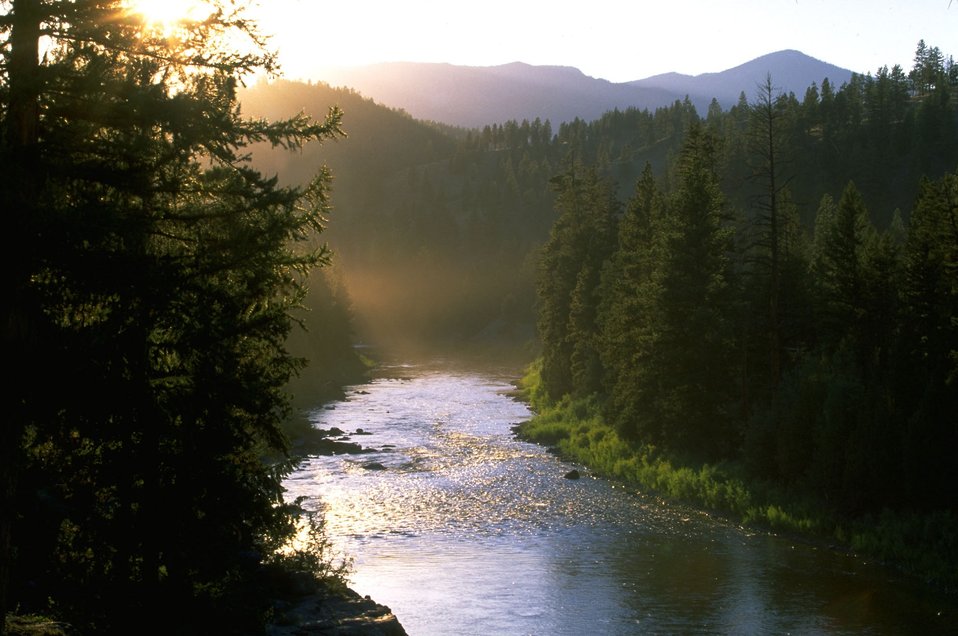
Early morning on the Blackfoot River